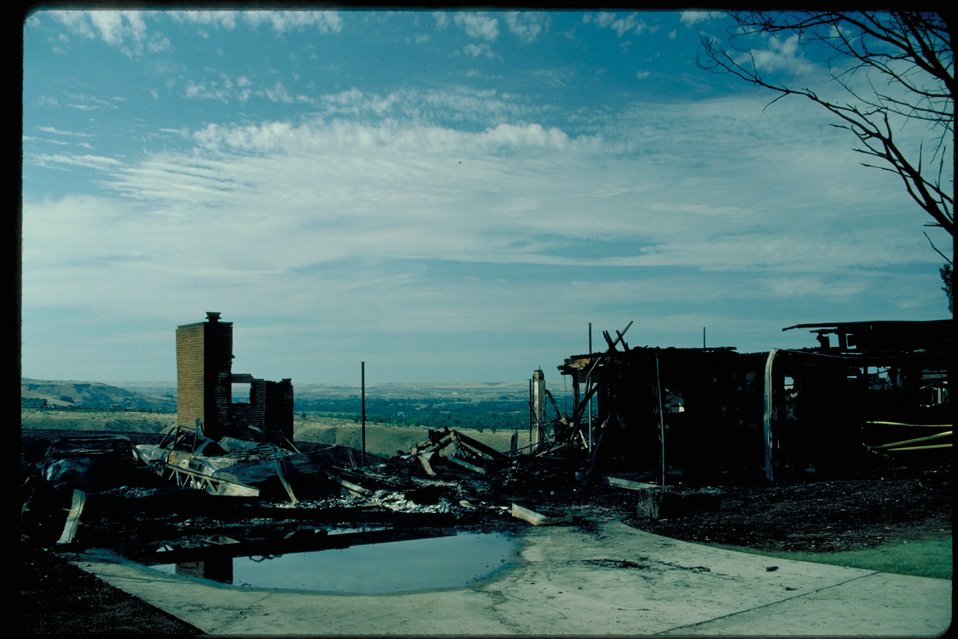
Burned house of Boise Front Four Rivers Field Office LSRD Lower Snake River District